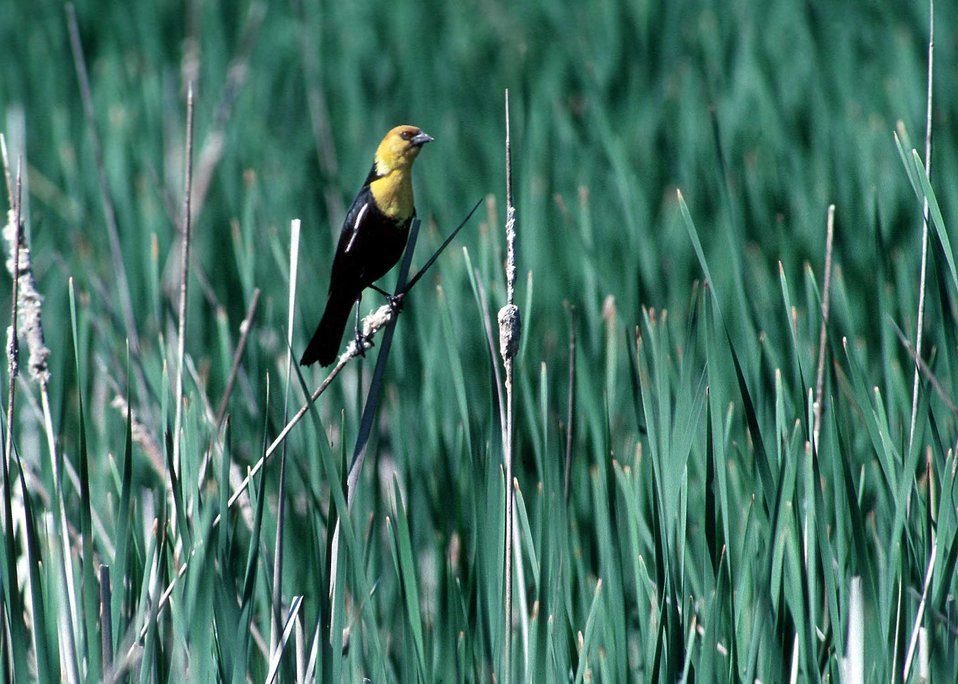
Prarie potholes provide an abundance of vital habitat for wildlife. Here a Yellow-Headed Blackbird rests upon marsh grass.